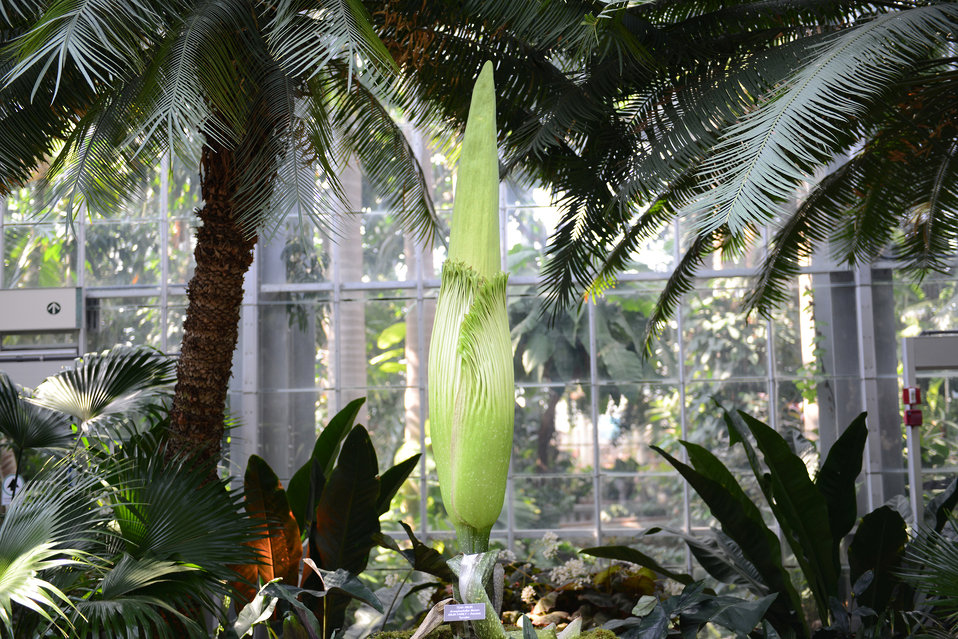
Titan Arum on July 16, 2013

Getting closer to bloom, the titan arum was up to 79 inches this morning.